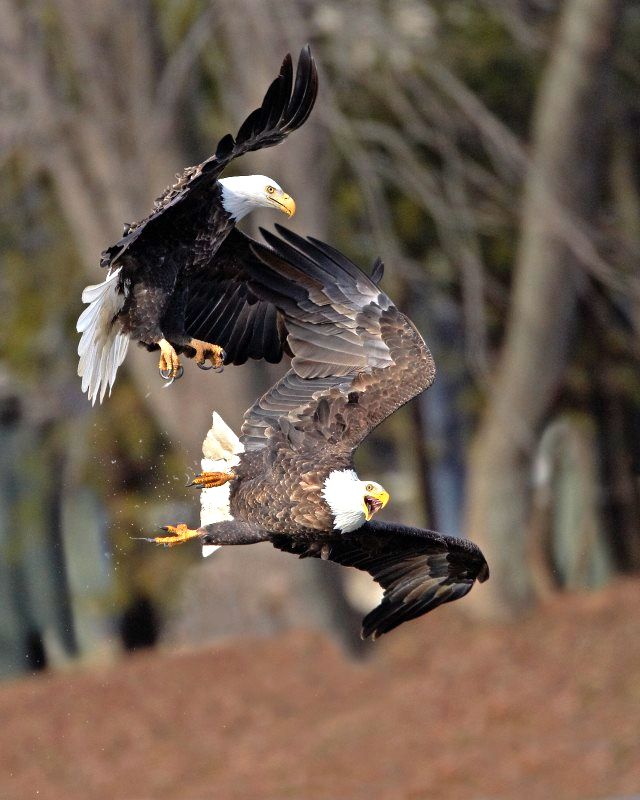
Food fight

Two eagles emerge empty-clawed after competing for a fresh fish at Upper Mississippi River National Wildlife Refuge. Photo: Les Zigurski, finalist, 2012 NWRA photo contest